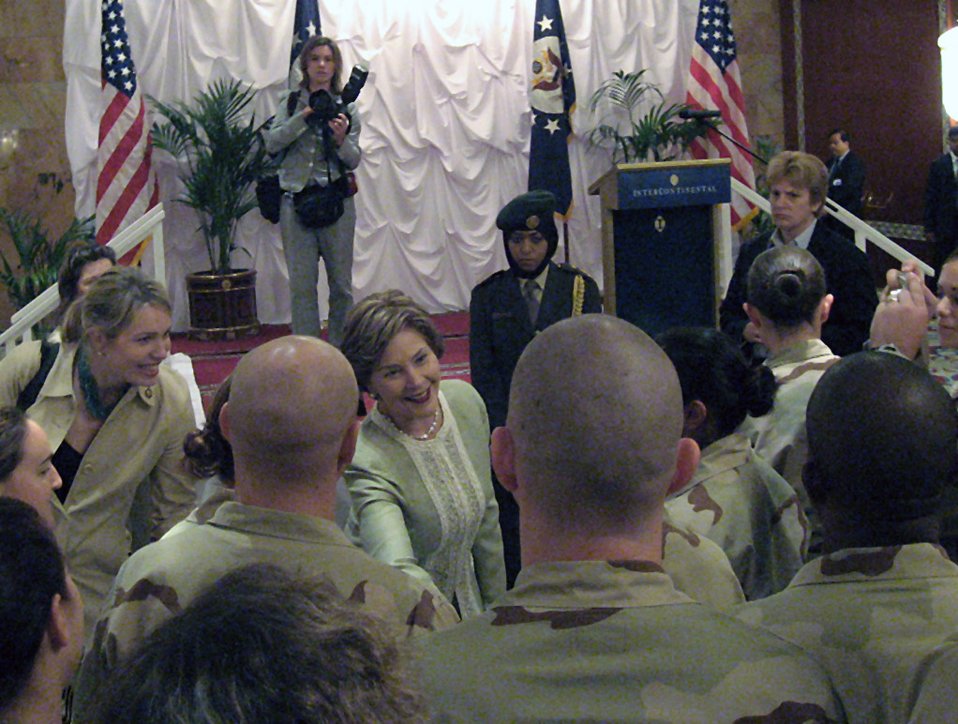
First Lady meets Airmen in Southwest Asia

First Lady Laura Bush meets with more than 40 Airmen from the 380th Air Expeditionary Wing Oct. 22 in Southwest Asia. The first lady was on a breast cancer awareness tour in the Persian Gulf. During their meeting, she personally thanked each Airmen for their service to the country. The first lady's visit highlights the accomplishments of the Middle East Partnership Initiative programs of the State Department, and also to visit a number of programs in countries that have launched the United States and Middle East partnership for breast cancer awareness and research.